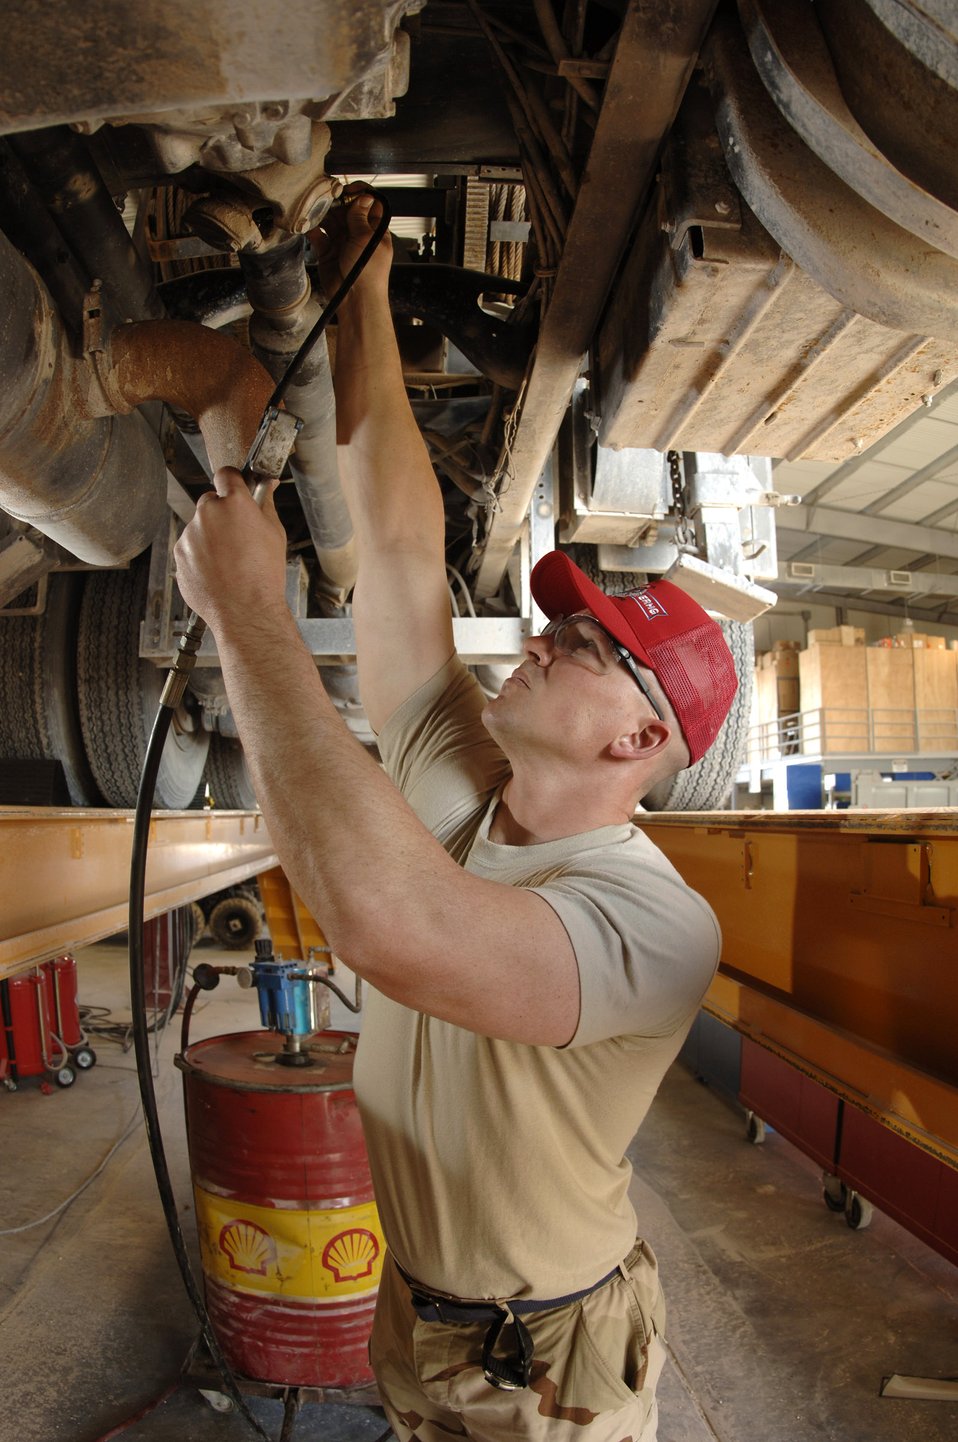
RED HORSE logistics hub supports Airmen uprange

Tech. Sgt. James Long uses an air-assisted lubrication gun to lubricate the chassis of a 10-ton wrecker hoisted up on a 55,000 pound hydraulic lift Feb. 19 in Southwest Asia. Sergeant Long is a 1st Expeditionary RED HORSE Group vehicle maintenance shop foreman.